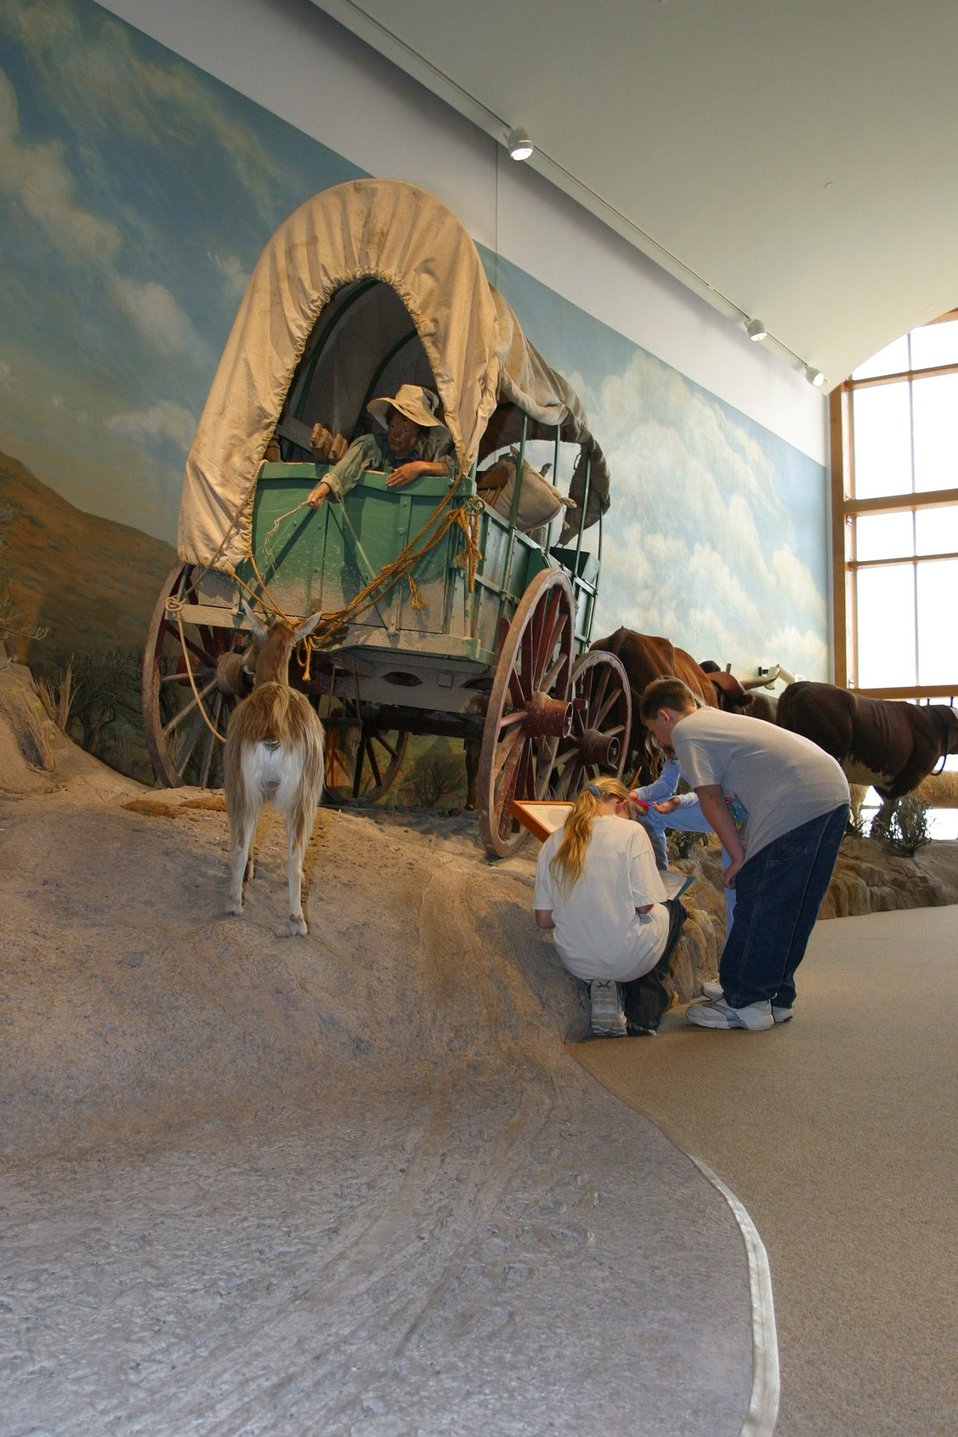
Hundreds of school children visit the National Historic Oregon Trail Interpretive Center every year.